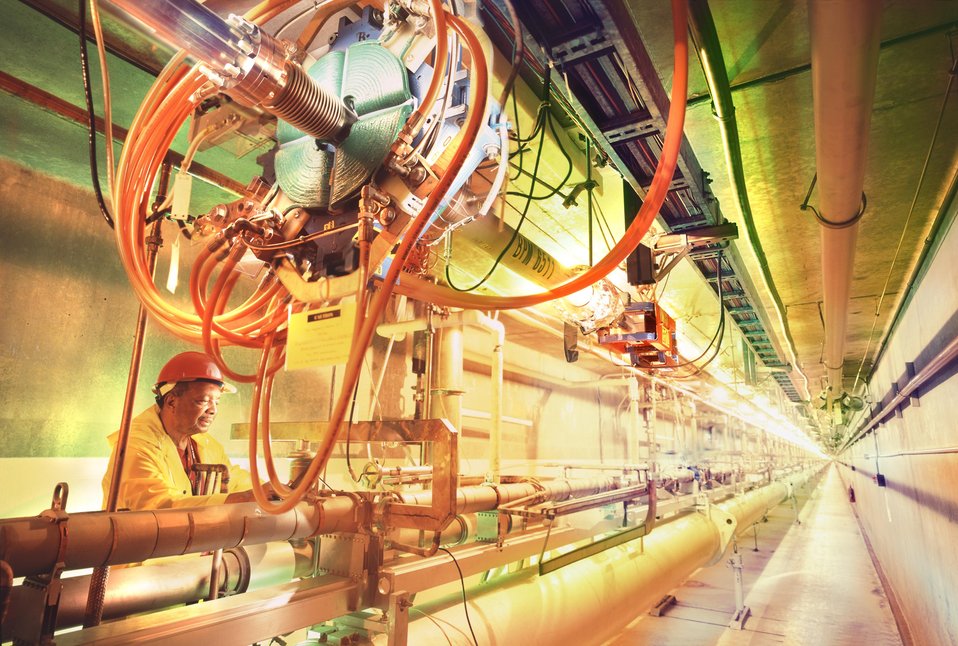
MAINTENANCE ON THE TWO MILE LONG LINEAR ACCELERATOR AT THE STANFORD LINEAR ACCELERATOR FACILITY.

SLAC IS ONE OF WORLD'S LEADING RESEARCH LABORATORIES. LOCATED AT STANFORD UNIVERSITY, MENLO PARK, CALIFORNIA, ITS MISSION IS TO DESIGN, CONSTRUCT AND OPERATE STATE OF THE ART ELECTRON ACCELERATORS AND RELATED EXPERIMENTAL FACILITIES FOR USE IN HIGH ENERGY PHYSICS AND SYNCHROTRON RADIATION RESEARCH.